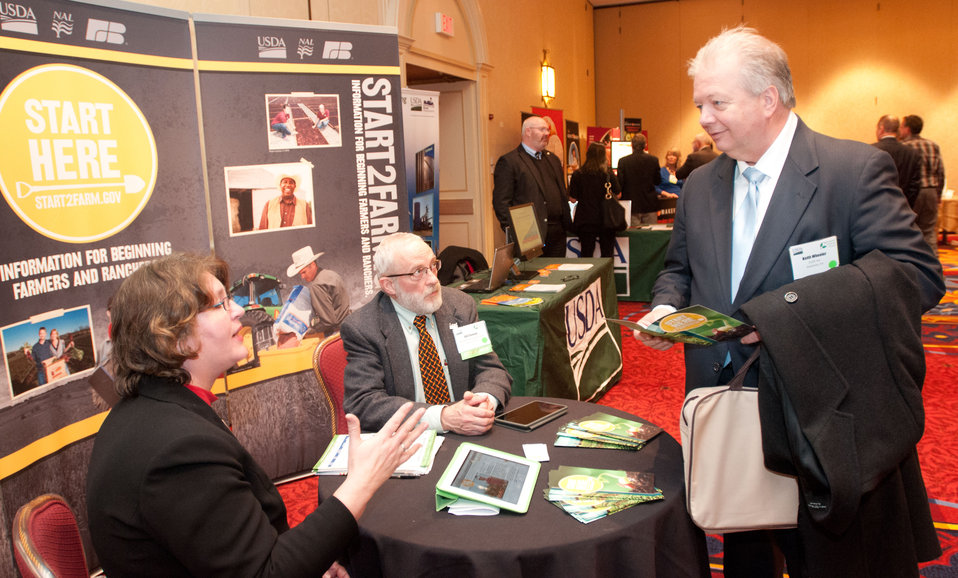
2013 Agricultural Outlook Forum, held at the Crystal Gateway Marriott Hotel, Arlington, Virginia on Thursday, Feb. 21, 2013. This annual Forum brings together producers, policymakers, business, government, and industry leaders to meet, exchange ideas, and discuss timely agriculture issues.